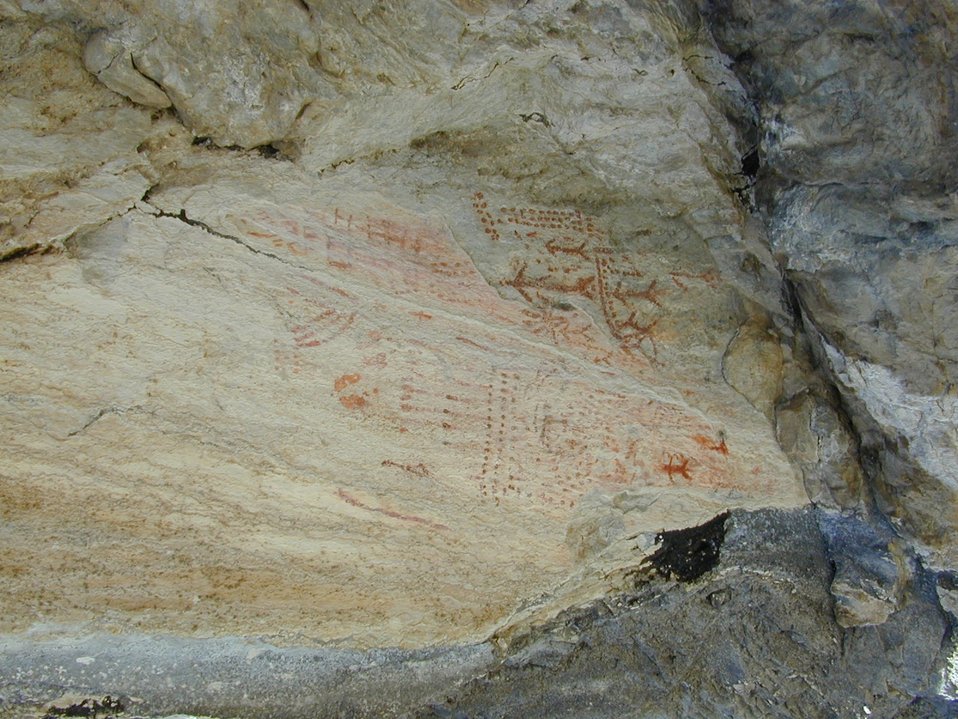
Birch Creek Valley Salmon Field Office Upper Columbia-Salmon Clearwater District